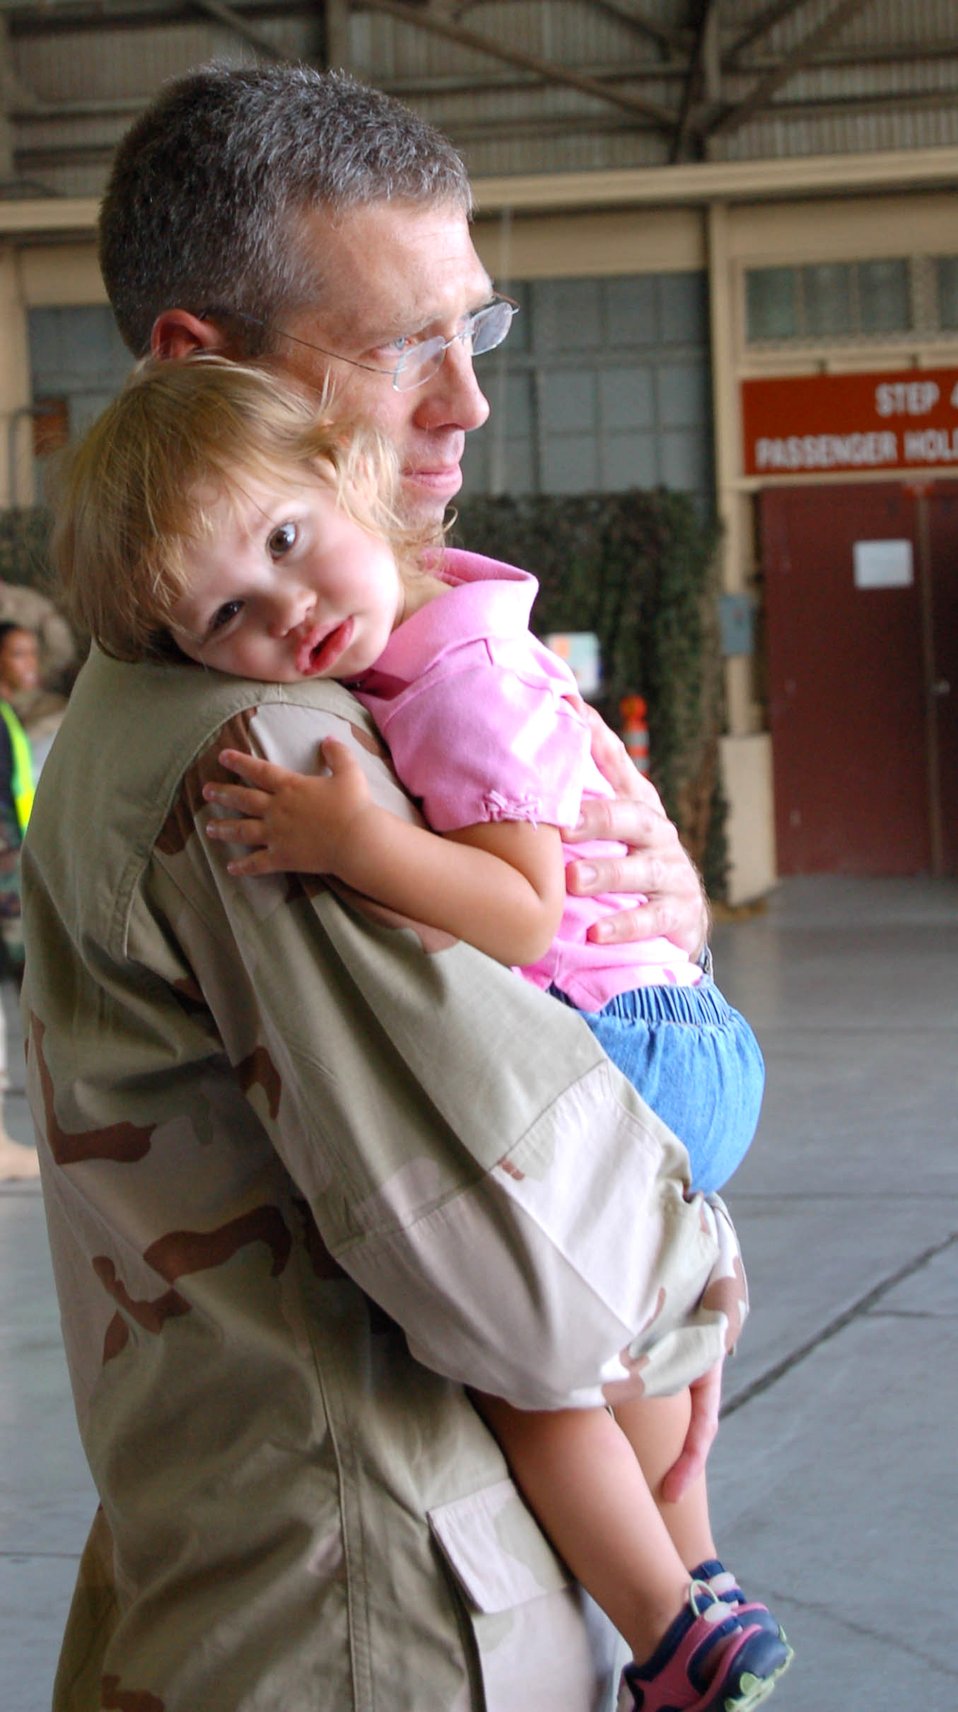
Yokota Airmen deploy throughout Southwest Asia

Lt. Col. Douglas Dickerson hugs his daughter one last time before deploying in September. Approximately 70 Airmen from Yokota Air Base, Japan, deployed in support of Operations Enduring Freedom and Iraqi Freedom; more than 300 Airmen from Yokota are set to deploy during Air Expeditionary Force 3 and 4. Colonel Dickerson is the 374th Logistics Readiness Squadron director of operations.